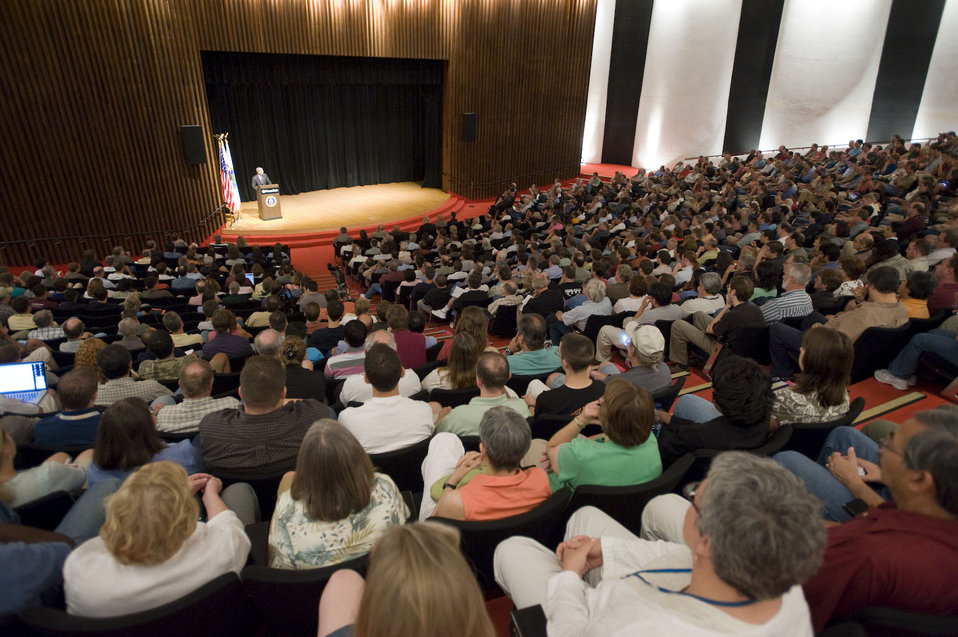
Deputy Secretary Daniel Poneman thanks employees at Fermilab for their hard work and discusses the importance of their cutting-edge research during a visit to the site.